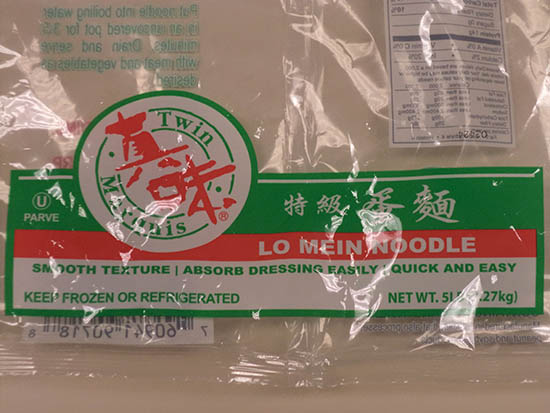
RECALLED – Cooked Noodle and Lo Mein Noodle

March 03, 2014 – Product Recall – Twin Marquis, Inc Issues Allergy Alert on Undeclared Milk in Specific Lots of its Cooked Noodle and Lo Mein Noodle.